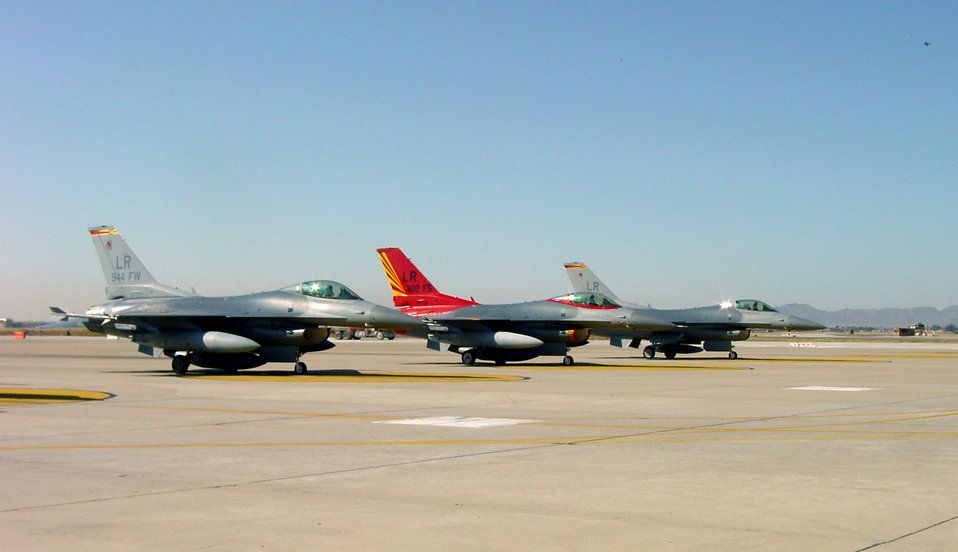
Reserve wing closes chapter in history

The last three 944th Fighter Wing F-16 Fighting Falcons depart Luke Air Force Base, Ariz., Feb. 12 as part of Base Realignment and Closure Commission actions to consolidate the service's declining fleet into fewer, larger units.